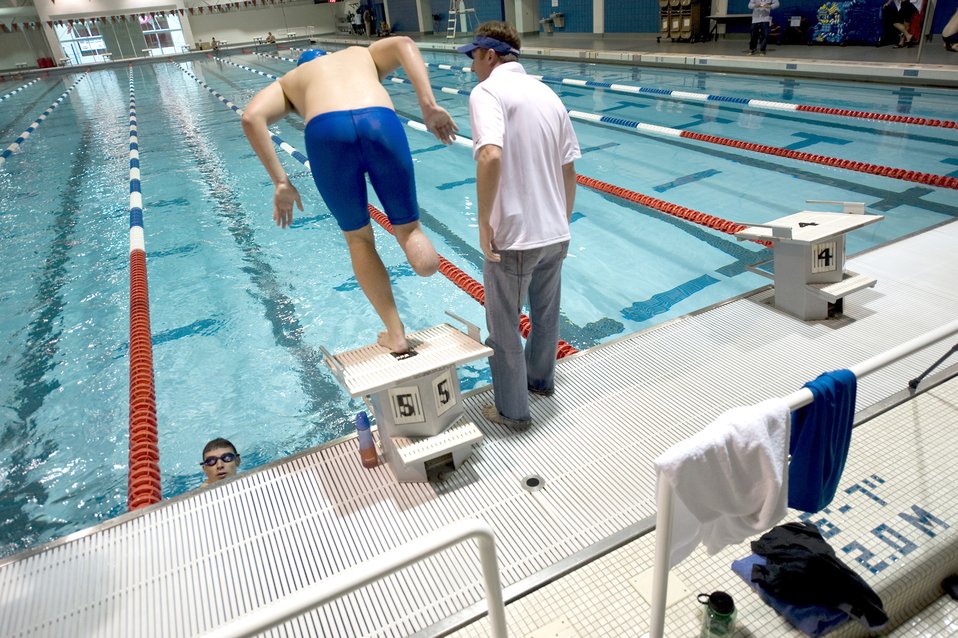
Warrior Games swim practice

Second Lt. Ryan McGuire dives off the starting block during swim practice May 11, 2010, at the Olympic Training Center in Colorado Springs, Colo.